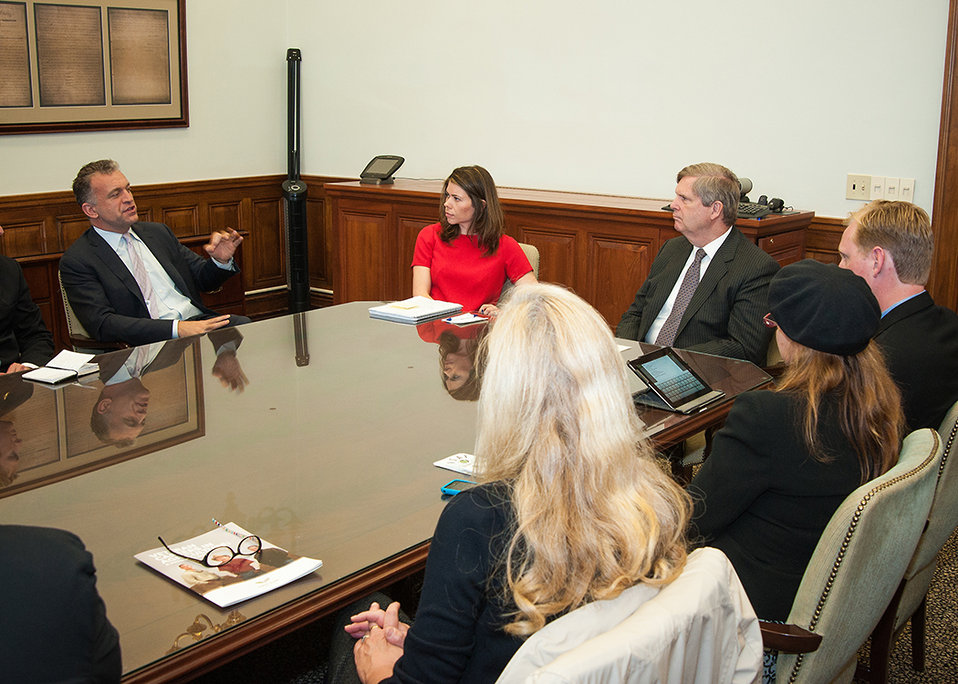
New York Times best-selling author and former host of MSNBC's The Dylan Ratigan Show Dylan Ratigan discusses the success of Archi’s Acres and the Veteran’s Sustainable Agriculture Training (VSAT) program with Agriculture Secretary Tom Vilsack at the U.S. Department of Agriculture (USDA) in Washington, D.C. on Tuesday, Apr. 3, 2013. Archi’s Acres offered the experience and knowledge they have with their farm and the Veteran’s Sustainable Agriculture Training (VSAT) program and discussed economic options available through USDA for active-duty military, veterans and anyone interested in sustainable agriculture as a career. (L to R Archie’s Acres Veteran’s Sustainable Agriculture Training (VSAT) Dylan Ratigan, U.S. Department of Agriculture (USDA) Deputy Chief of Staff Anne MacMillan, Agriculture Secretary Tom Vilsack, Archi’s Acres and Veteran’s Sustainable Agriculture Training (VSAT) Colin Archipley, Archi’s Acres and Veteran’s Sustainable Agriculture Training (VSAT) Karen Archipley, and Veteran’s Valor Fund representative Filomena Spiese).